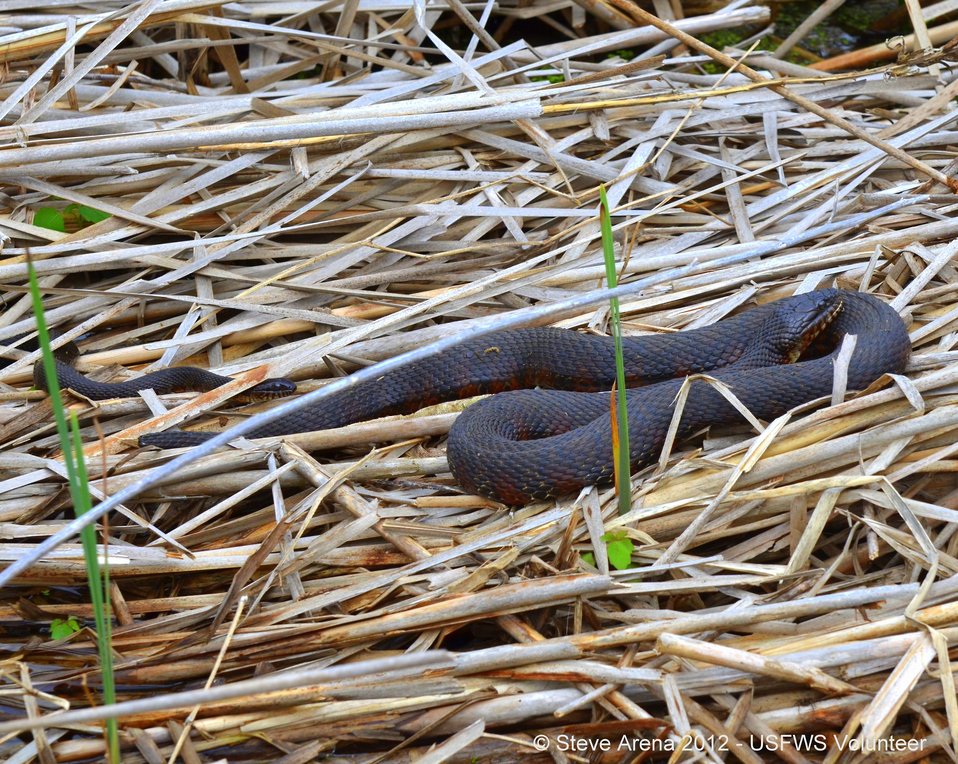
Northern Water Snake (Nerodia sipedon) with young along the dike 06 May 2012

Two snakes at Great Meadows National Wildlife Refuge.